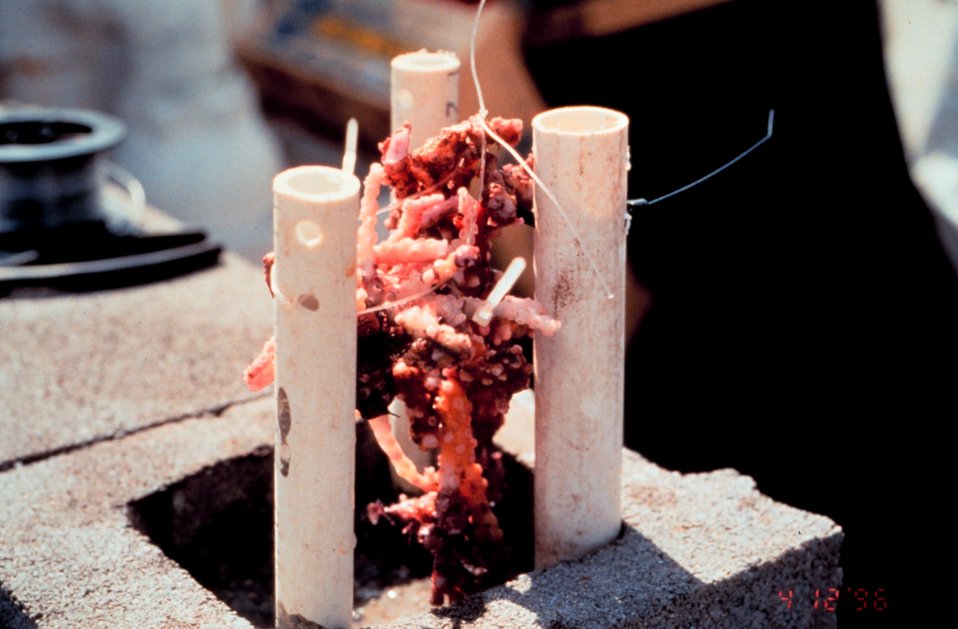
PVC pipes are used to protect the Oculina varicosa and to provide stability during the restoration.